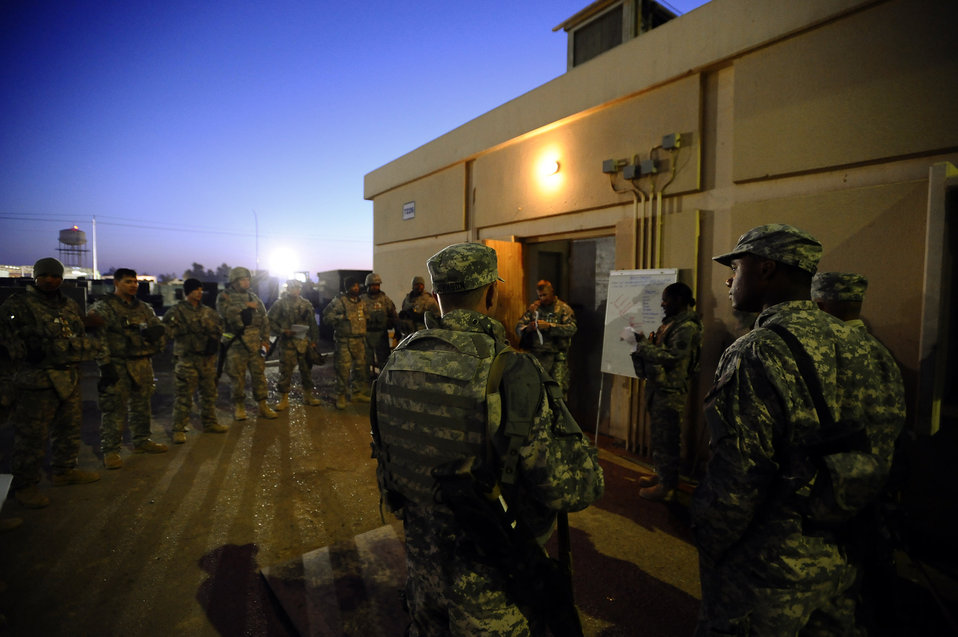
Air Force engineers answer the call from Soldiers in Iraq

Airmen and Soldiers gather for a briefing prior to an outside-the-wire mission Dec. 11 at Joint Base Balad, Iraq. The Airmen, who are assigned to the 732nd Expeditionary Civil Engineer Squadron Det. 6, undertake construction projects for the Army, while the Soldiers provide convoy security.